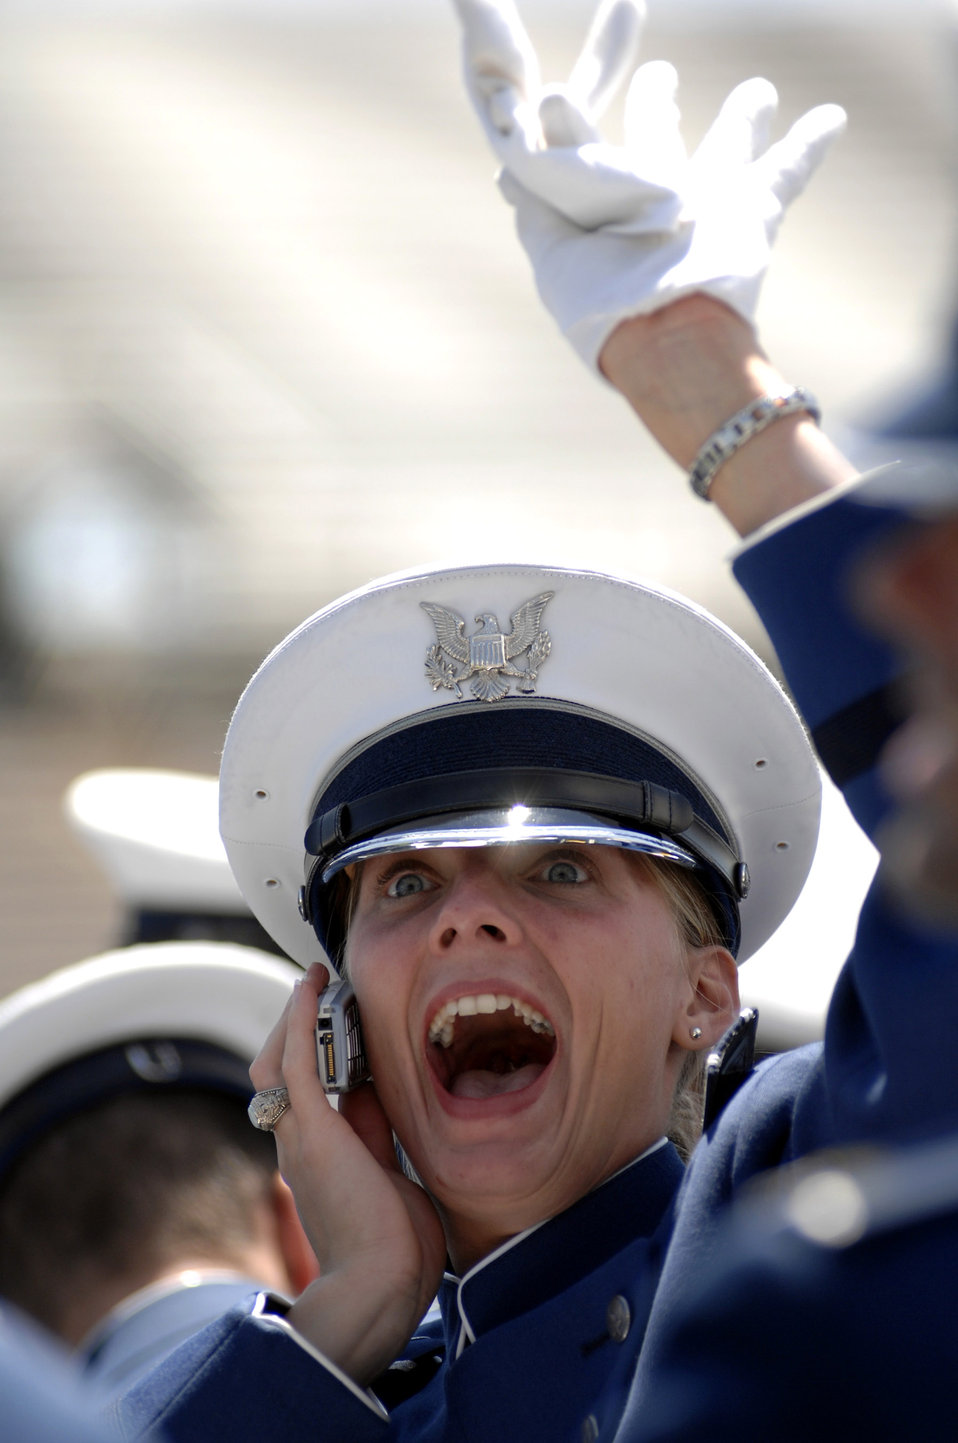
'Stay true' SECDEF tells Air Force Academy grads

Newly minted 2nd Lt. Heather Moe waves and talks to her family as they celebrate her graduation during the 2007 U.S. Air Force Academy graduation ceremony May 30 in Colorado Springs, Colo.